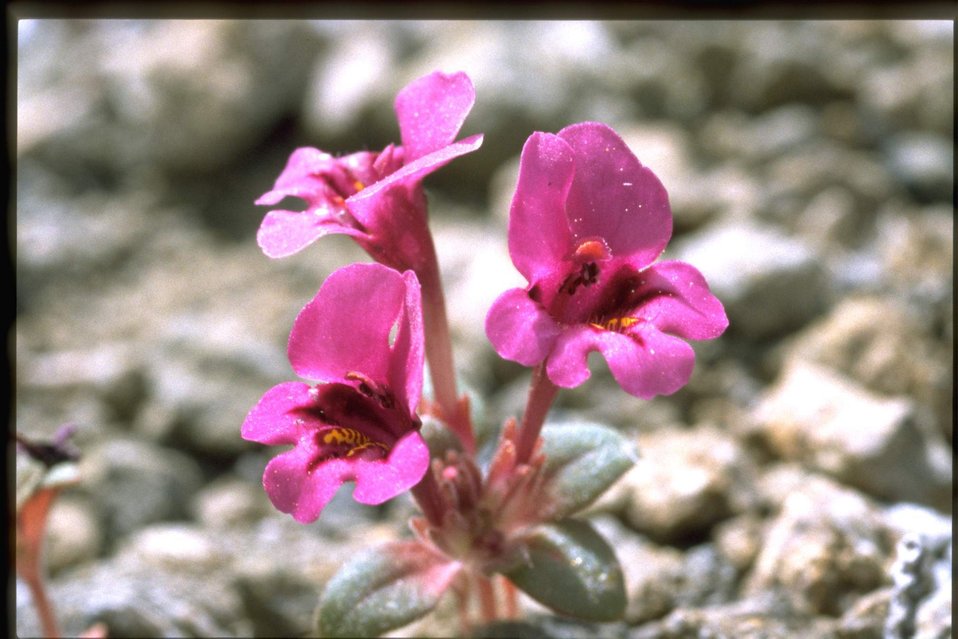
Medium shot of Cusick's monkey flower.